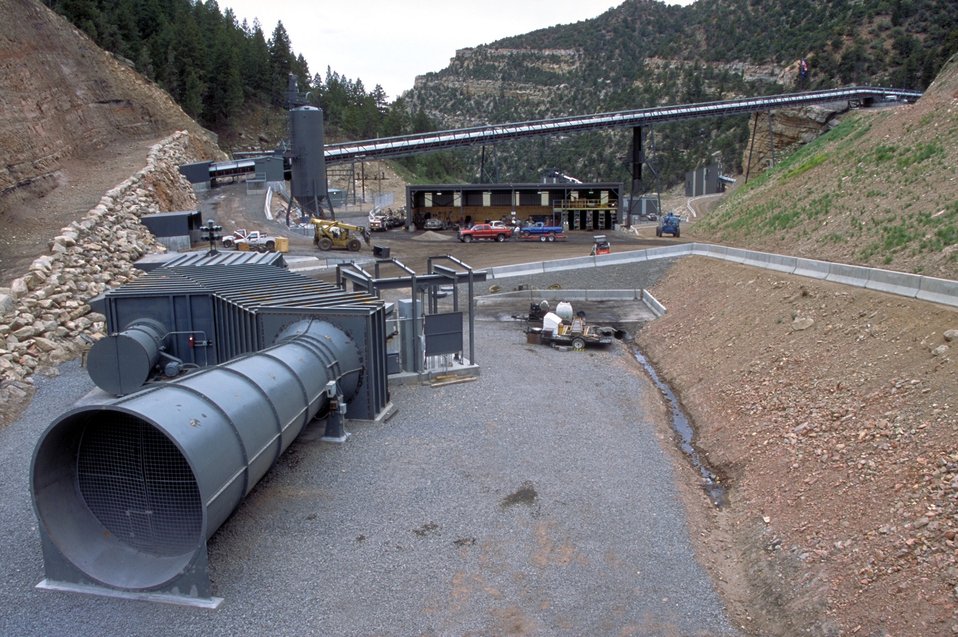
Coal production near Price, Utah.